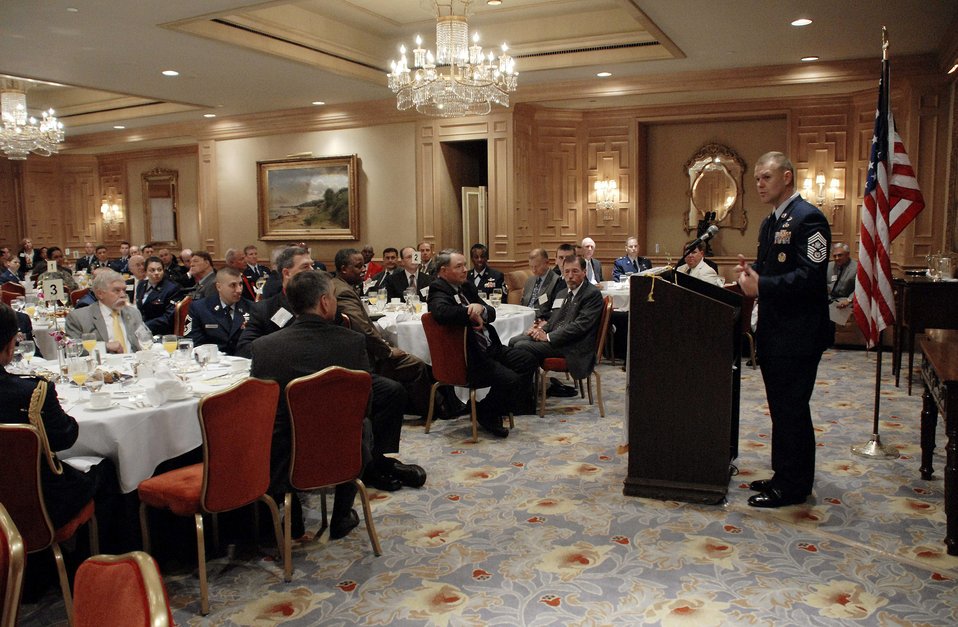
CMSAF Roy honored

Chief Master Sgt. of the Air Force James A. Roy gives a speech July 28 in Washington D.C. during an Air Force Association breakfast honoring him. Chief Roy used the event to talk about the educational opportunities afforded to him and many Airmen around the world and thanked the association for its support to Airmen and their families.